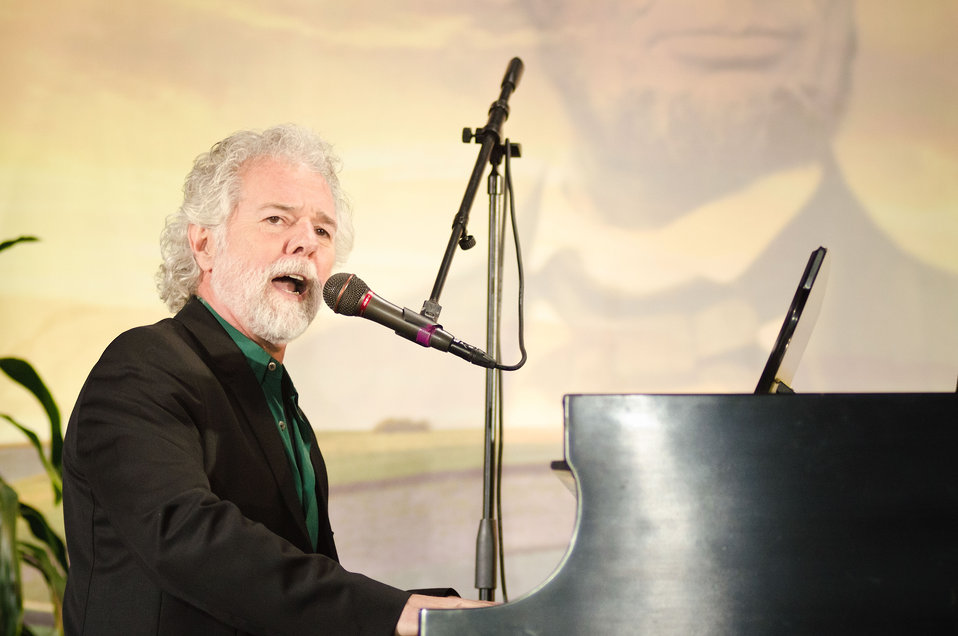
Chuck Leavell Rolling Stones keyboardist, conservationist and Georgia tree farmer played the George Harrison tune, “Here Comes the Sun” at the United States Department of Agriculture's 150th Anniversary celebration in Washington, D.C., on Tuesday, May 15, 2012.